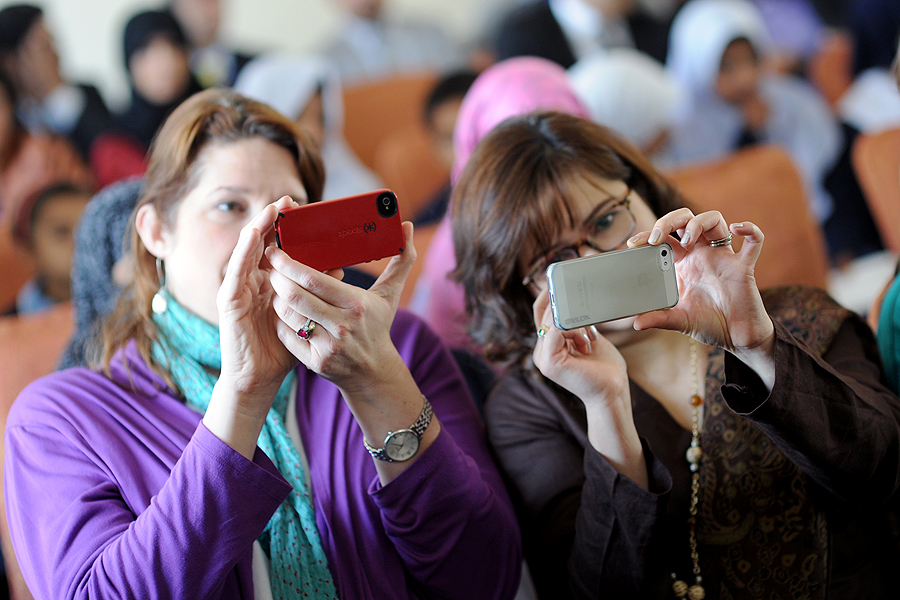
United States and Pakistan Launch the Pakistan Reading Project